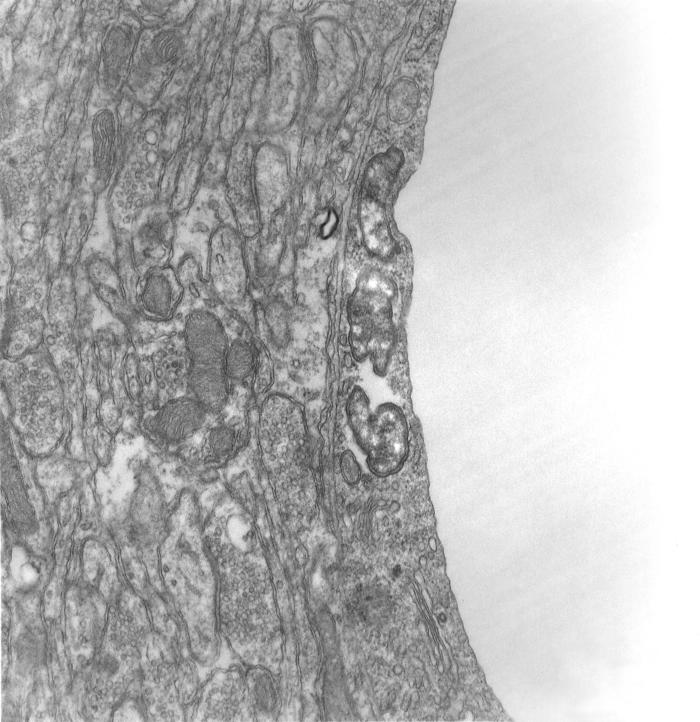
This 1978 transmission electron micrograph (TEM) depicted a brain capillary of a mouse that had been experimentally infected intravenously with Orientia tsutsugamushi rickettsial micro-organisms. This photomicrograph revealed three O. tsutsugamushi organisms visible within the cytoplasm of the host endothelial cell.